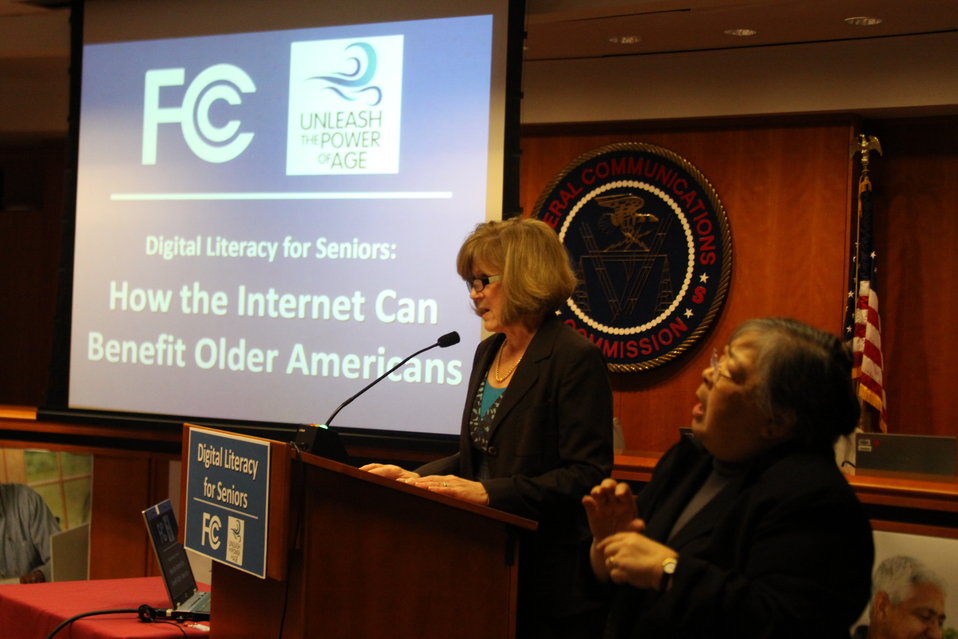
Remarks from Kris Monteith, Acting Chief, Consumer and Governmental Affairs Bureau: Digital Literacy for Seniors: How the Internet Can Benefit Older Americans, April 24, 2013